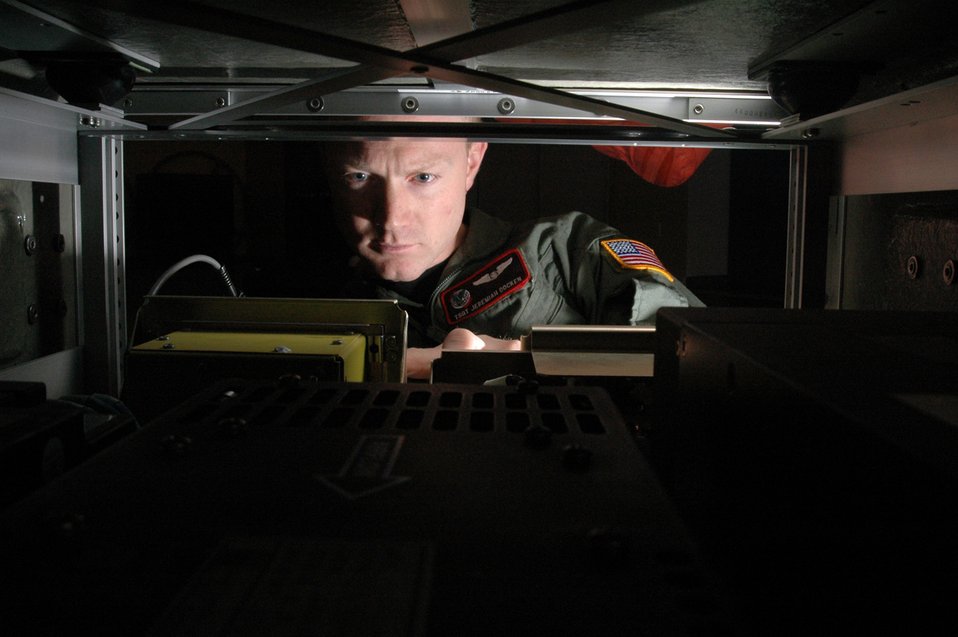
ROBE

FAIRCHILD AIR FORCE BASE, Wash. (AFPN) -- Tech. Sgt. Jeremiah Docken loads data into a Roll-On Beyond Line-of-Sight Enhancement Spiral 2 kit as part of a training exercise Jan. 17. The upgraded ROBE Spiral 2 equipment brings enhancements to a system that is revolutionizing battlefield communications. Acting as a flying network node, the ROBE kits help forward data streams, voice and other information from units in the battle zone to satellites, which in turn can forward the information anywhere on the globe. Sergeant Docken is a boom operator with the 92nd Air Refueling Squadron.